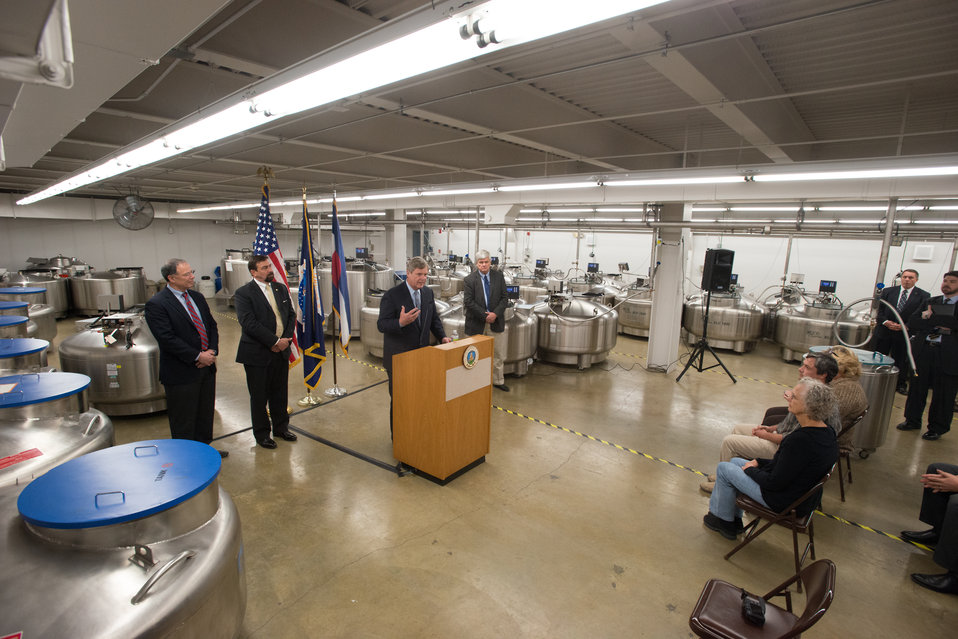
(L to R standing behind podium) Colorado State University (CSU) Dean Agricultural Sciences Dr. Craig Beyrouty, CSU President Dr. Anthony Frank, and U.S. Department of Agriculture (USDA) Agriculture Research Service (ARS) Northern Plains Area Director Dr. Larry Chandler listen to Agriculture Secretary Tom Vilsack speak to staff and media at USDA's ARS National Center for Genetic Resources Preservation (NCGRP) in Ft. Collins, CO on Wednesday, Nov. 6, 2013. NCGRP is the largest agricultural gene bank facility in the U.S. The NCGRP staff conducts groundbreaking research to develop more efficient and effective means for preserving plant and animal germplasm, and for better understanding the genetic structure of these invaluable materials. Gene banks around the world have adopted the research findings, preservation techniques, and specialized technology developed by the NCGRP: many international scientists travel to the NCGRP for research and training.